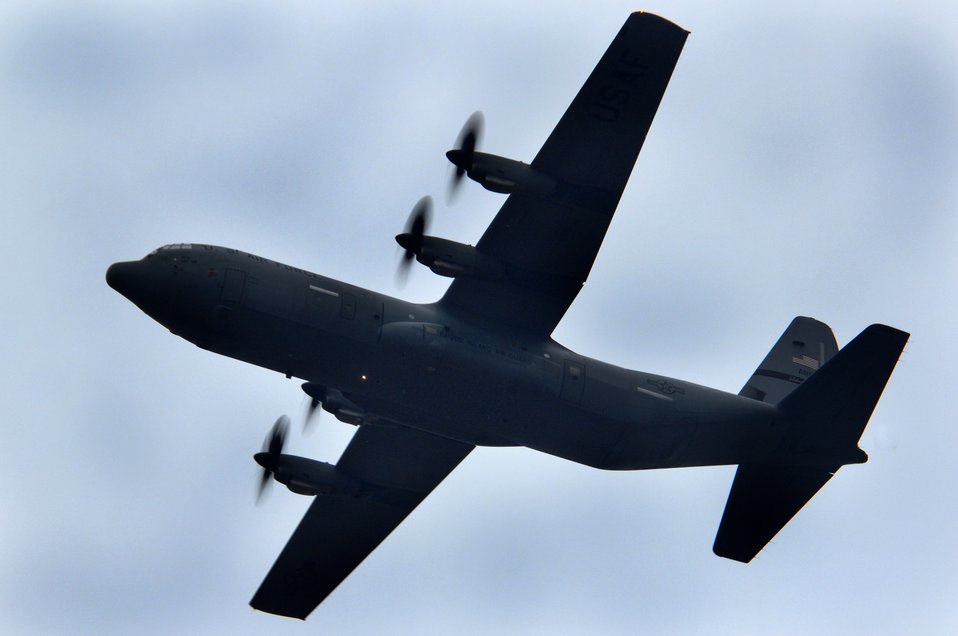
Ramstein receives first upgraded C-130

The new J model C-130 Hercules aircraft makes a pass Nov. 8 over Ramstein Air Base, Germany. The C-130Js will begin to replace the aging C-130E's at Ramstein in approximatley 2009.